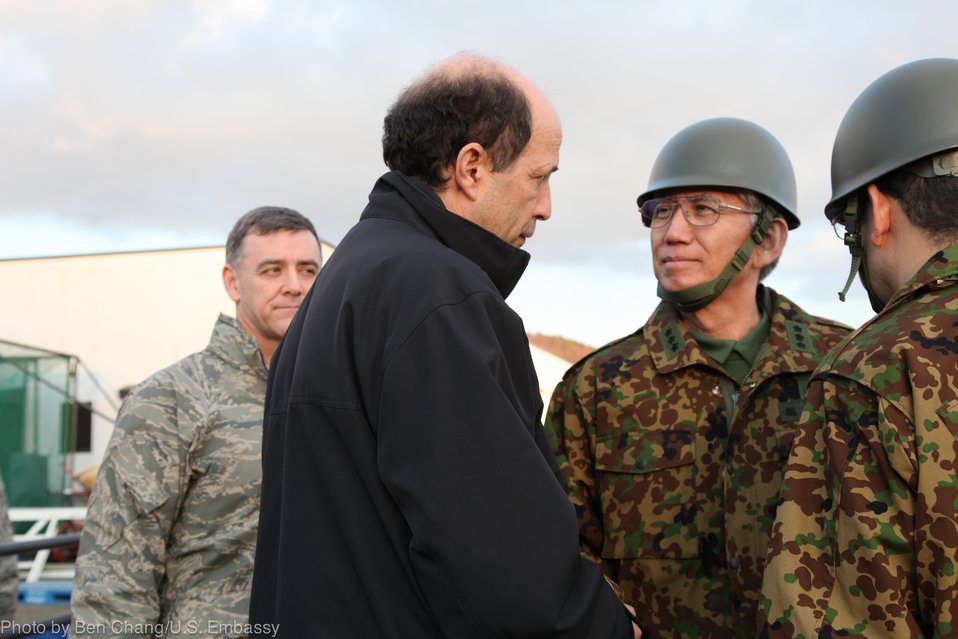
Ambassador Roos Discusses Relief Efforts With Japan Self Defense Forces

U.S. Ambassador to Japan John Roos discusses relief efforts with Japan Self Defense Forces leaders in Sendai, Japan, on March 23, 2011.